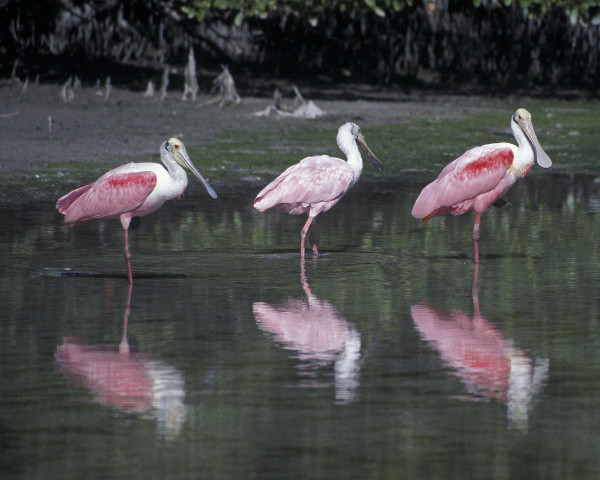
roseate spoonbills